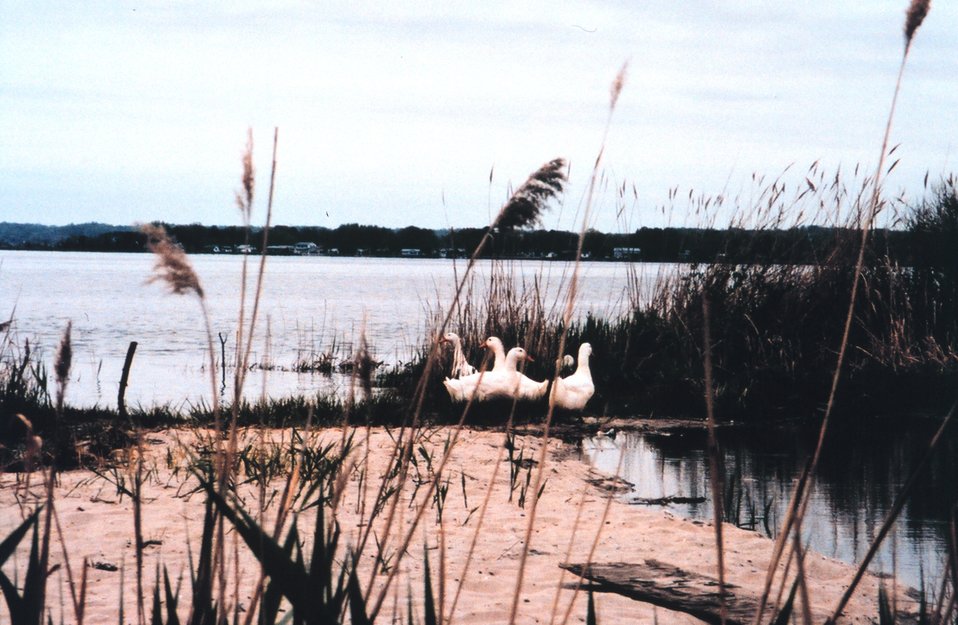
A small flock of domestic ducks near the area of the April 7th Swanson Creek oil spill. Fortunately, these birds were not affected at this time.